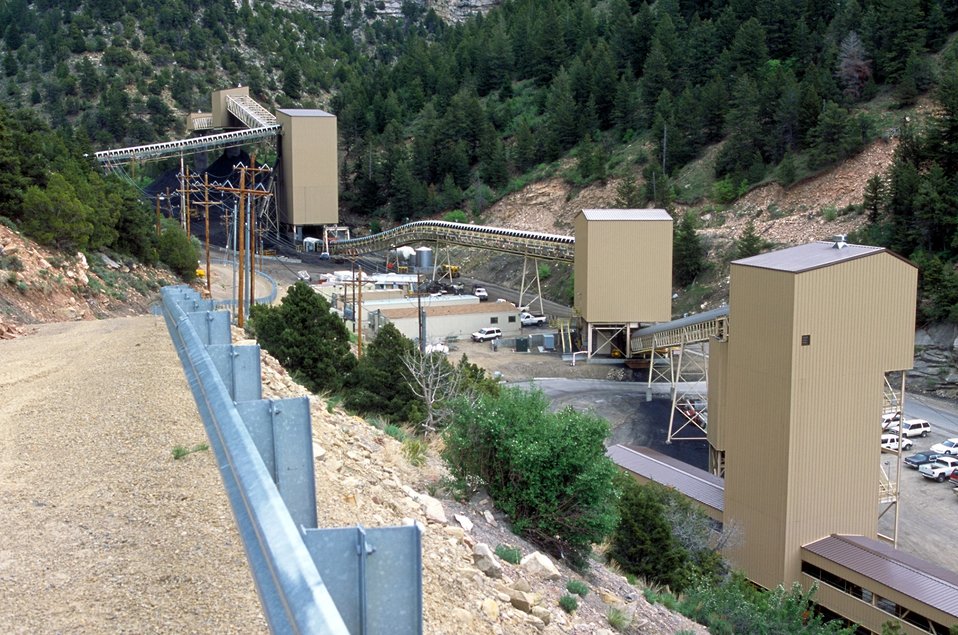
Coal production near Price, Utah.